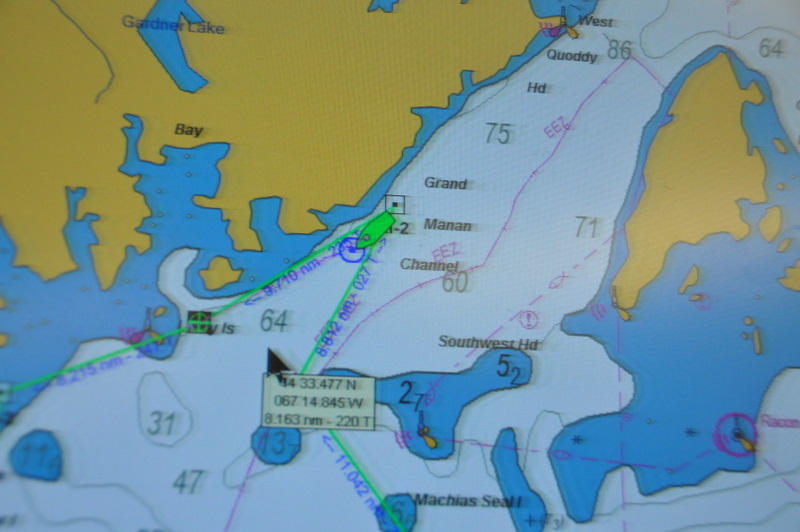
July 2009, The Bay of Fundy, Grand Manan Channel our furthest point north

This was a picture taken of our onboard satellite navigation system, showing us at our furthest point north in the middle of the night. This coastal water quality survey brought crew and scientists from Boston Harbor, all the way up to the Bay of Fundy, collecting water samples.